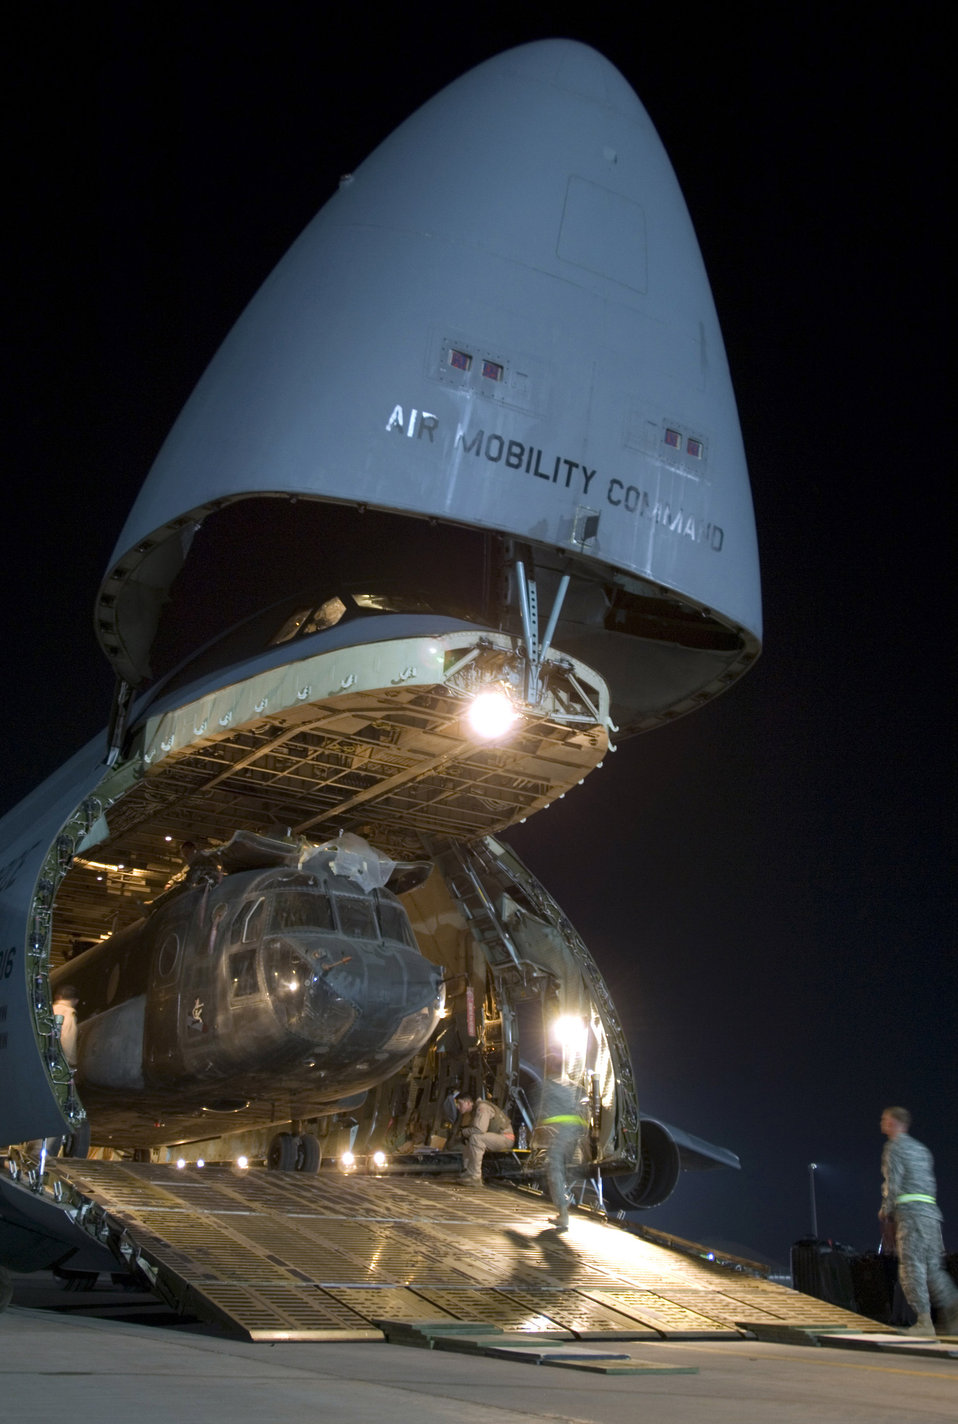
Open wide!

Airmen load a CH-47D Chinook heavy-lift helicopter into the cargo bay of a C-5 Galaxy Aug. 3 at Joint Base Balad, Iraq. More than 950 cargo aircraft, 12,000 tons of cargo and 19,000 passengers are processed each month, making it the busiest aerial port operation in the Department of Defense. This C-5 is deployed from the 22nd Airlift Squadron at Travis Air Force Base, Calif. The Chinook belongs to the Army's Bravo Company, 1st Battalion, 52nd Aviation Regiment, which is deployed to Al Toqaddum, Iraq.